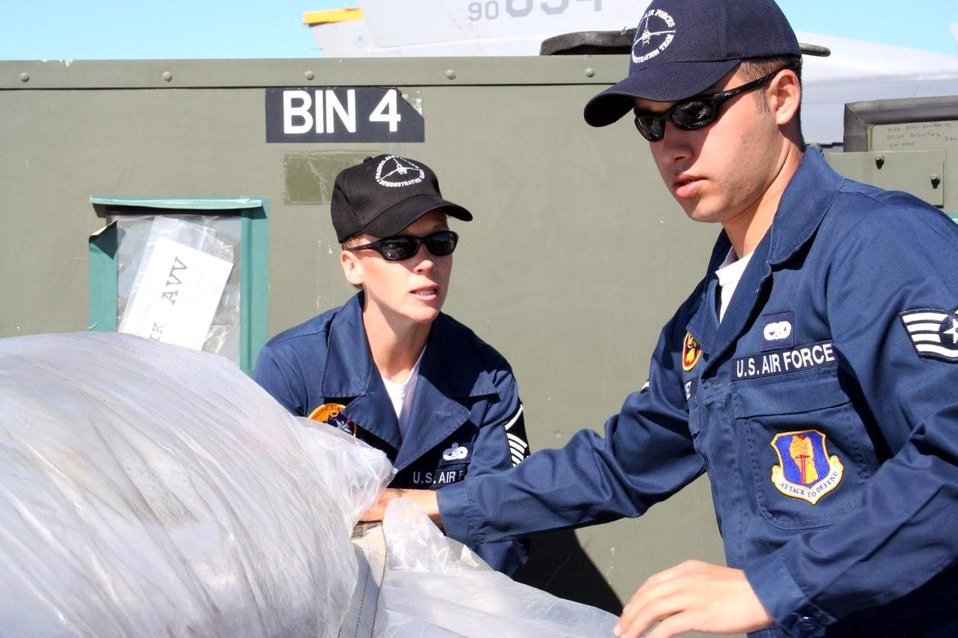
Maintaining in Australia

Master Sgt. Renee Miller and Staff Sgt. Adan Gomez secure a pallet for transport March 26 at Avalon Airport in Victoria, Australia. Pacific Air Forces Airmen and aircraft showcased American air power at the Australian International Airshow '07. Sergeant Miller is the demo team superintendent and Sergeant Gomez is an avionics technician. Both are assigned to the 35th Aircraft Maintenance Squadron at Misawa Air Base, Japan.